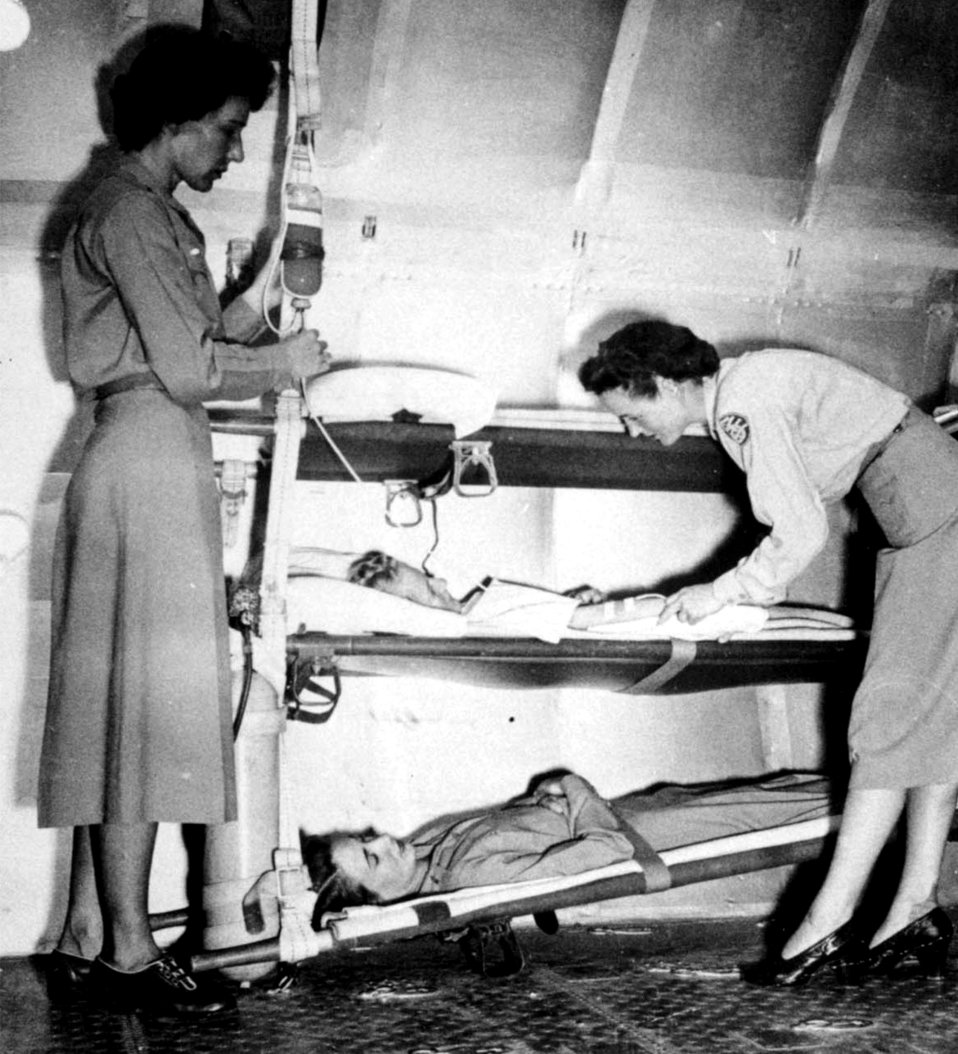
Flight nurses remembered

WORLD WAR II -- Although the role of the flight surgeon was developed in World War I, it was not until November 1942, when the School of Air Evacuation opened at Bowman Field, Ky., that the flight surgeon's counterpart -- the flight nurse -- became a member of the medical flight team. Before World War II, no care was provided to wounded Soldiers during evacuation flights.